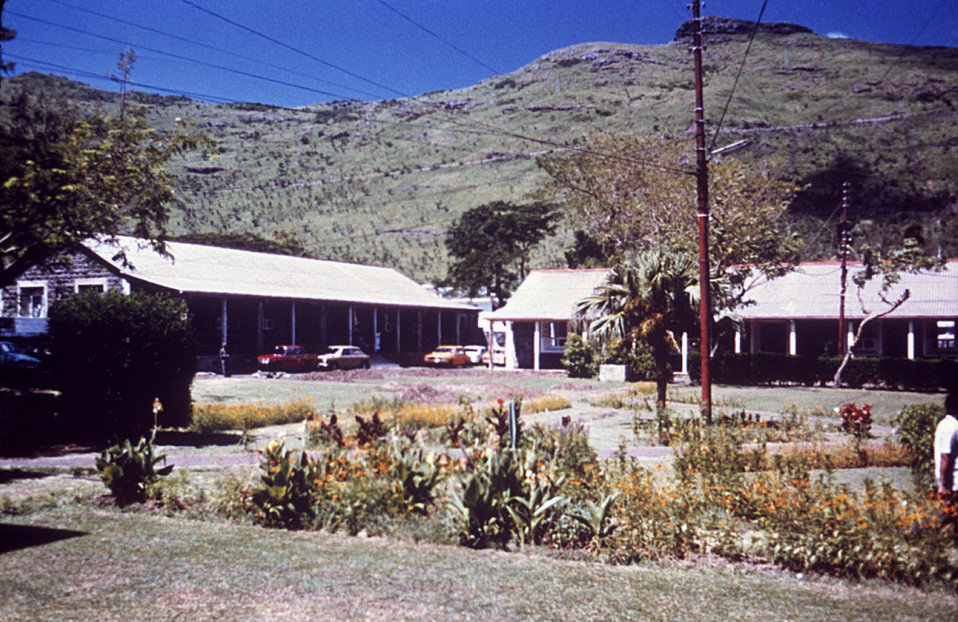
This 1980 photograph depicts the children's ward of the Port Louis, Mauritius Civil Hospital where typhoid patients were housed.